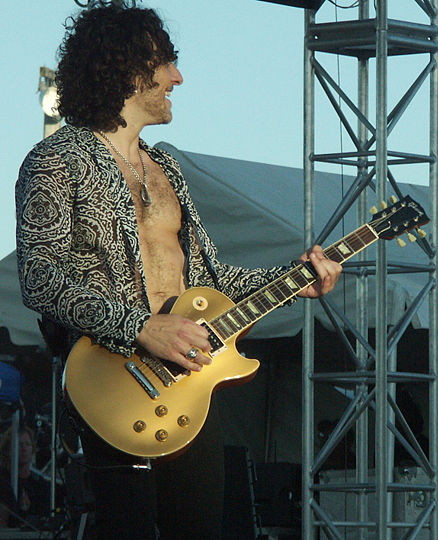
Taken by Weatherman90 at North Dakota State Fair Def Leppard Concert, 2007-07-26, adapted from Image:CollenCampbell